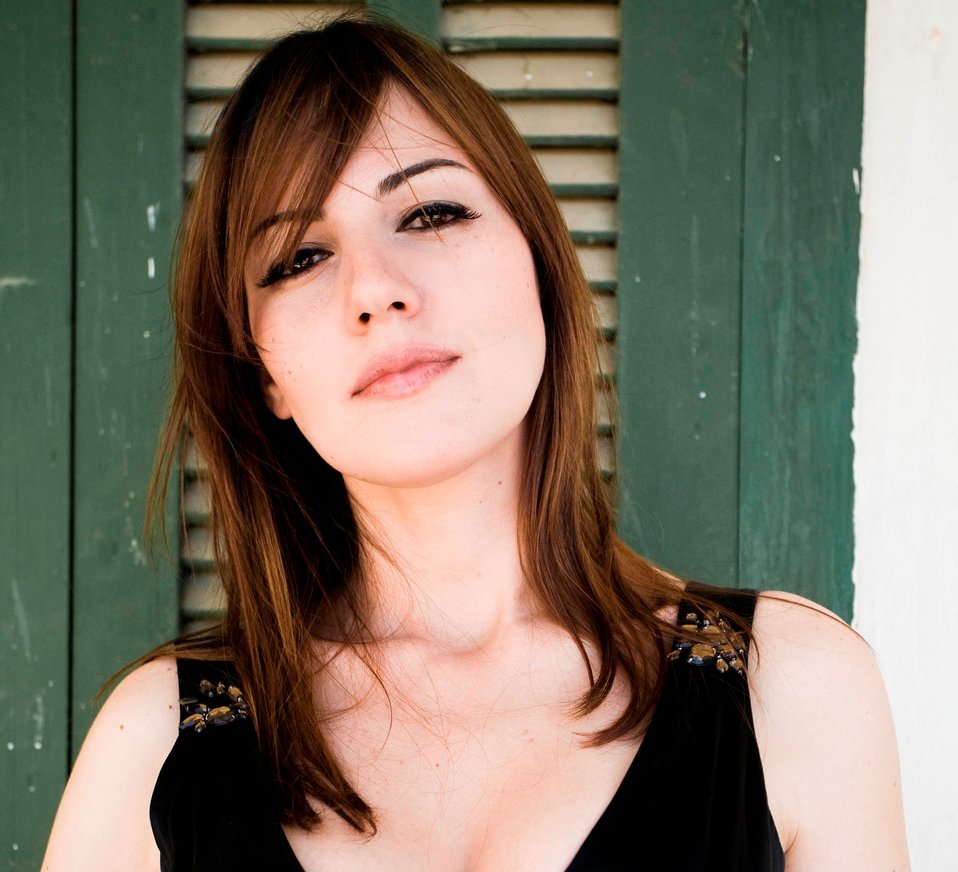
Personal Picture of Darine Hamze